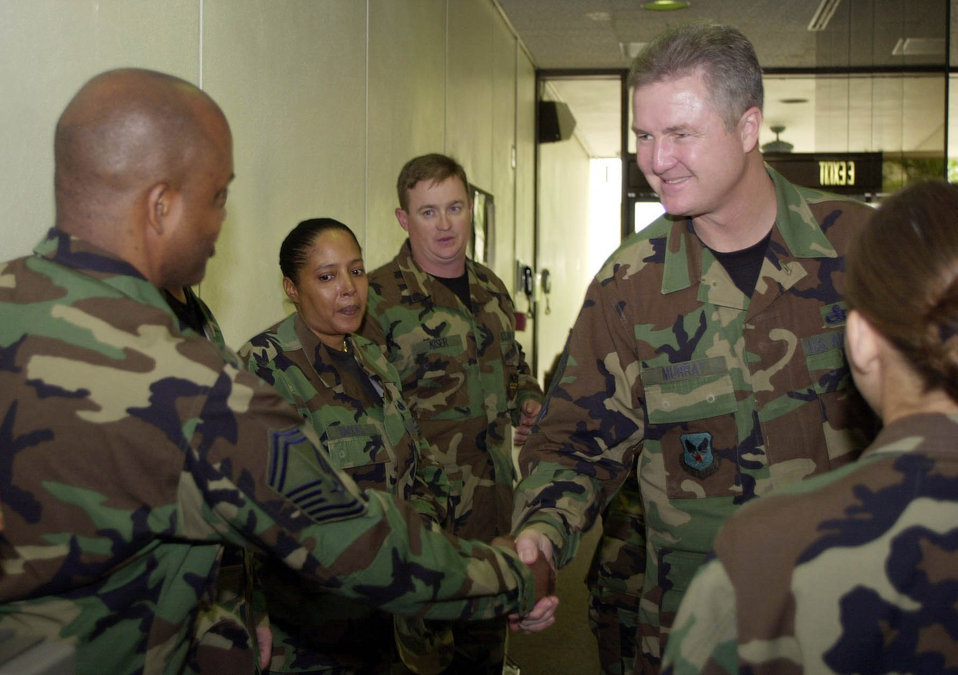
CMSAF visits U.S. Southern Command

MIAMI (AFPN) -- Chief Master Sgt. of the Air Force Gerald R. Murray greets Airmen during his visit to U.S. Southern Command headquarters here Jan. 19. Chief Murray made numerous stops to visit Airmen in the SOUTHCOM area of operations, which included Honduras, Ecuador, Columbia, Curacao Netherland Antilles and the Miami area Jan. 16 to 19.